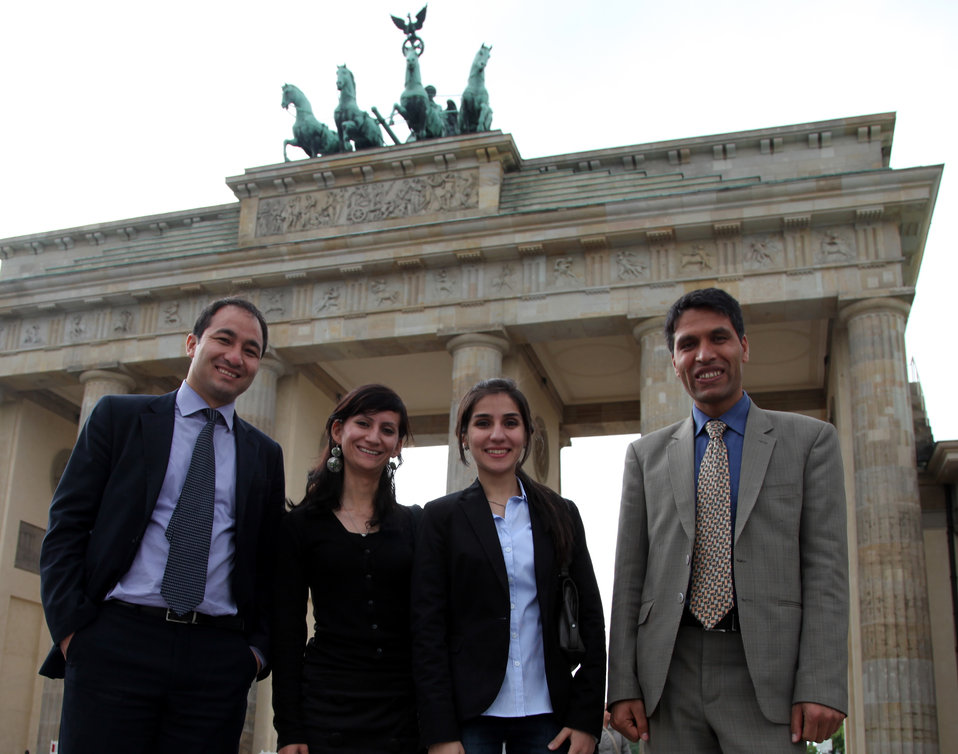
Young Afghans Pose While Travelling Around Germany to Talk About Progress in Their Country

Four young Afghans, Jawed Nader, Rahima Housaini, Wazir Ahmad Khorami, and Zubaida Akbar visit the Brandenburg Gate while traveling around Germany to talk about the progress that’s been made since 2001 and their hopes for the future of their country in Berlin, Germany, on May 17, 2011.